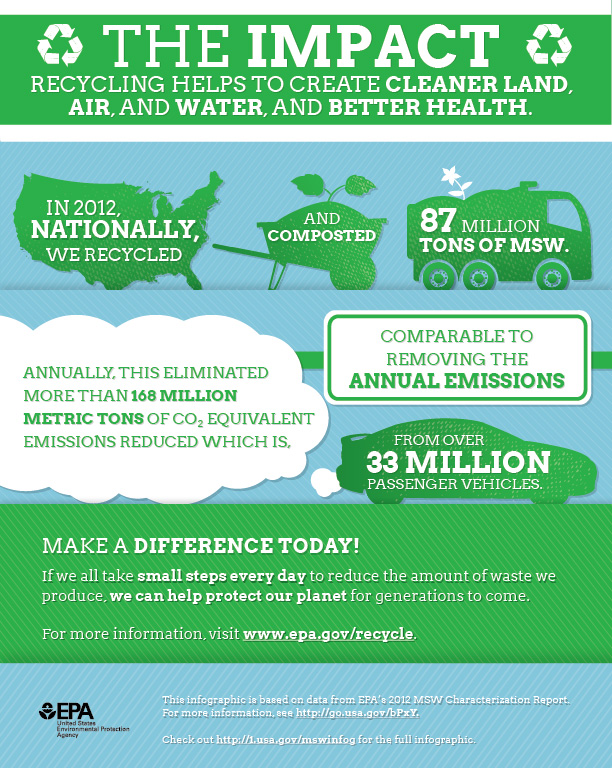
The Impact

Everything's made from stuff on our planet, but “virgin” or “raw” materials are harvested directly from the earth, then transported and processed. This uses a large amount of energy and produces greenhouse gas emissions. Making things from recycled materials can save energy and reduce those emissions.

- Full infographic: go.usa.gov/bPcA
- Learn how the stuff we throw away affects climate change: www.epa.gov/climatechange/climate-change-waste/
- 2012 Municipal Solid Waste Characterization Fact Sheet: go.usa.gov/bPxY